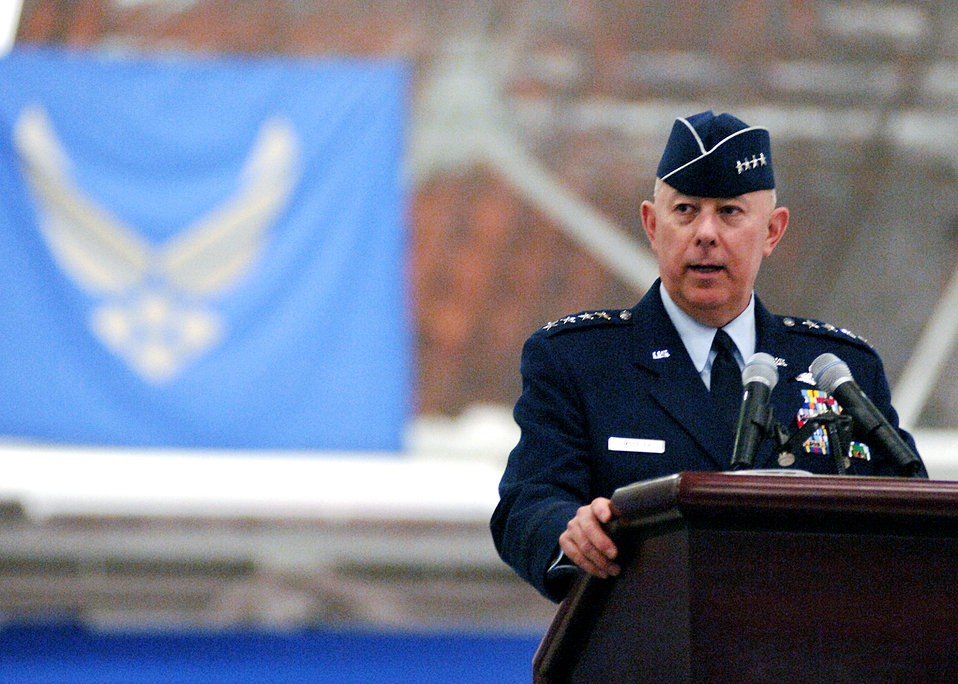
SECAF celebrates welcome to the blue

ANDREWS AIR FORCE BASE, Md. (AFPN) -- Air Force Chief of Staff Gen. T. Michael Moseley presides over a ceremony welcoming Secretary of the Air Force Michael W. Wynne into the blue today. Secretary Wynne assumed the duties as the 21st secretary of the Air Force in November 2005.